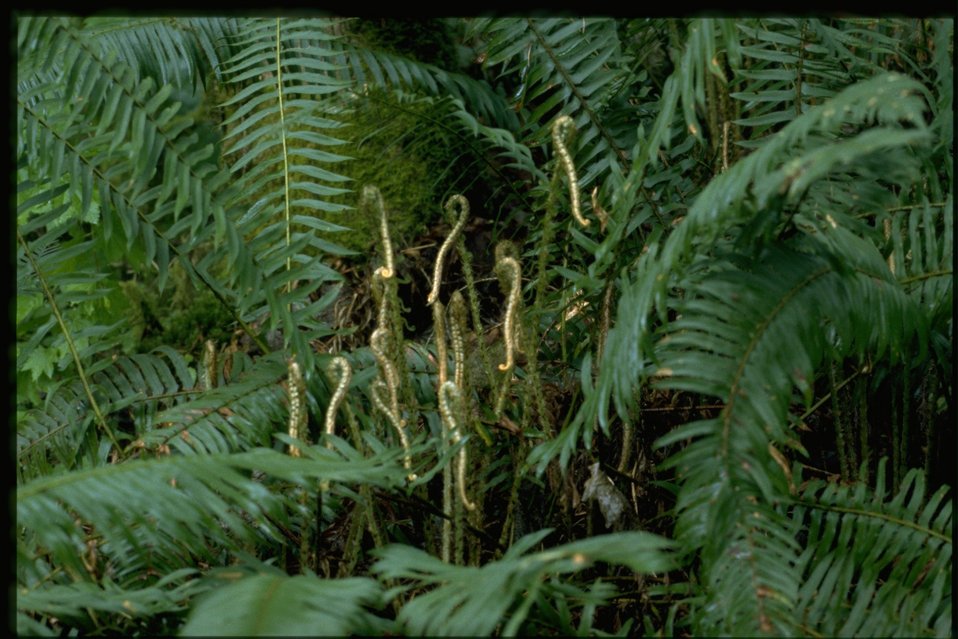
Polystichum manitum.